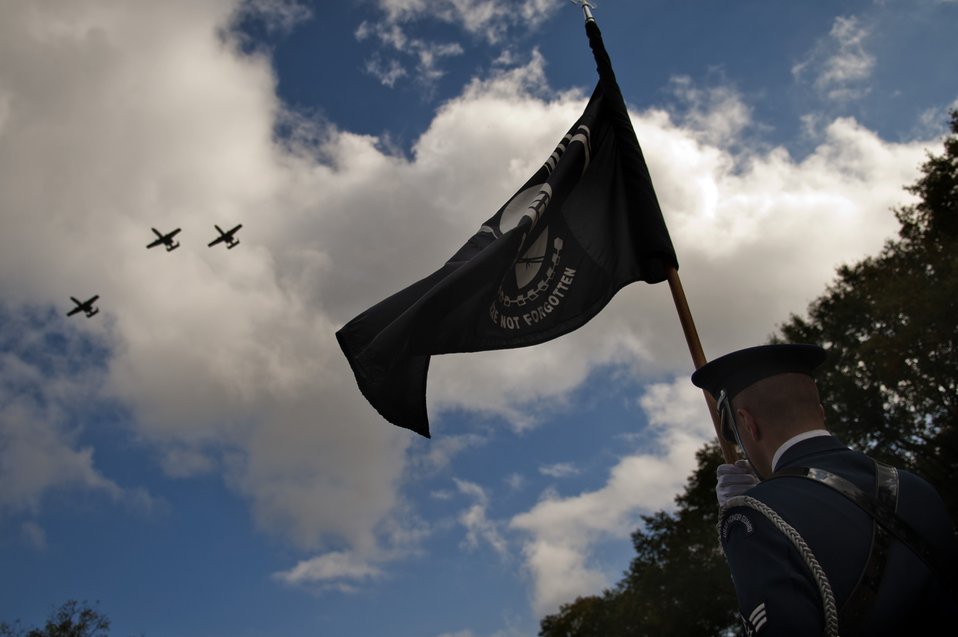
Final Fly-by

Three A-10 Thunderbolt II fly in the missing man formation during the funeral of Col. Wendell Keller, of Fargo, N.D., and Capt.Virgil K. Meroney, of Fayetteville, Ark., at the Arlington National Cemetery Oct. 20, 2012. March 1, 1969, Keller and Meroney were the crew of an F-4D Phantom II aircraft that went down while carrying out a night time strike mission in Khammouan Province, Laos. Nearby aircrews reported seeing the aircraft hit by enemy fire. No parachutes were seen after the aircraft was hit. Heavy enemy presence in the area prevented recovery efforts. Between 1994 to 2011, the